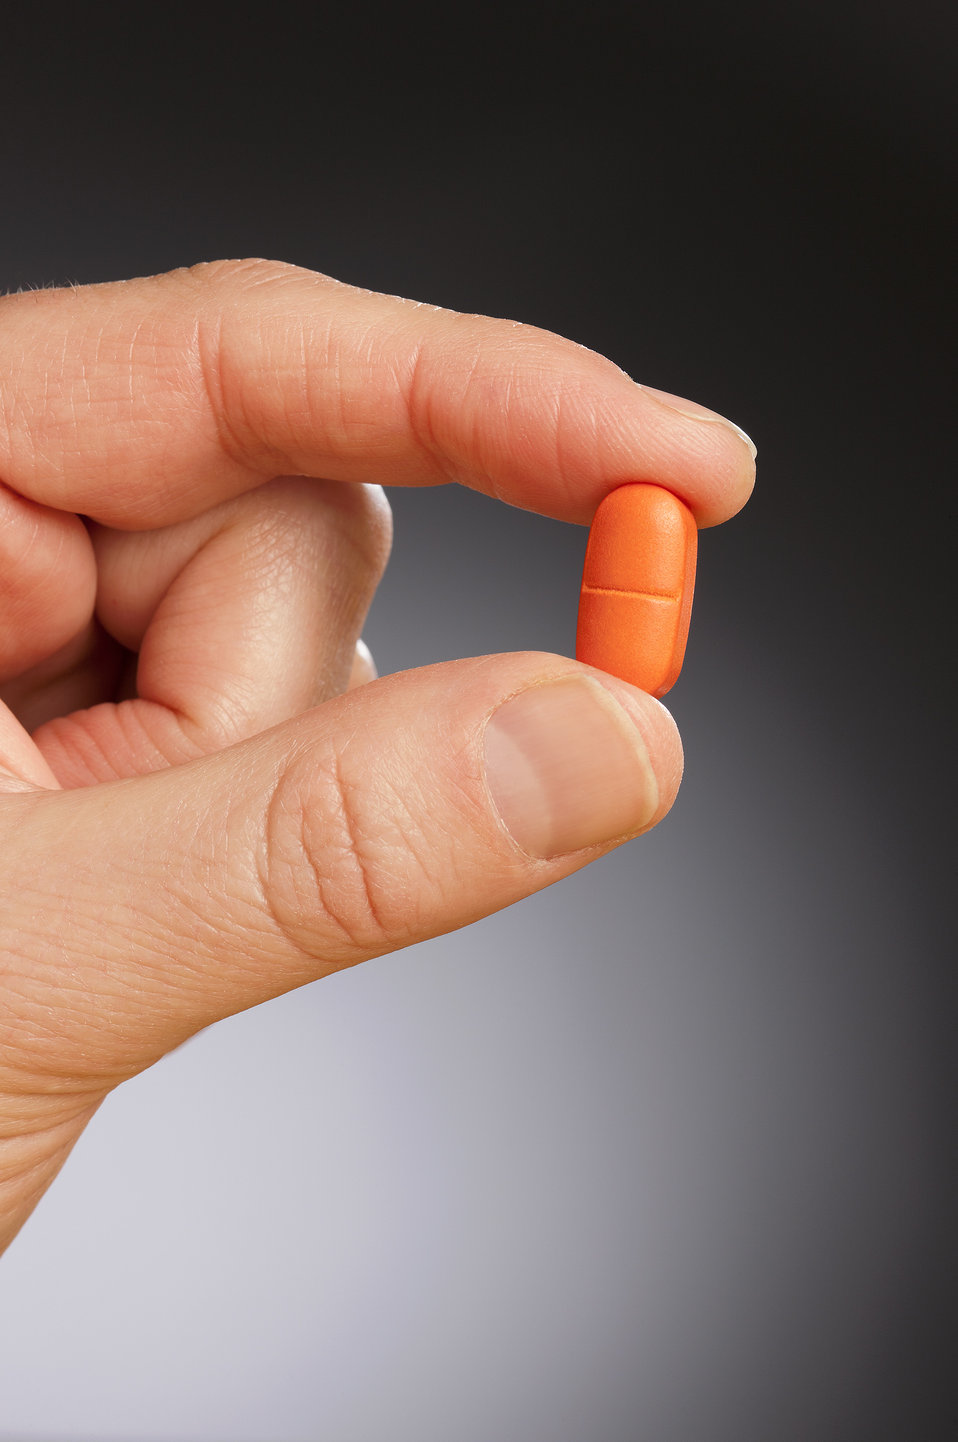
U.S. Department of Agriculture (USDA) Agriculture Research Service (ARS) Beltsville Human Nutrition Research Center in 2011 released data tables that summarize not only nutrients gained from foods and beverages consumed but for the first time also from supplements consumed.